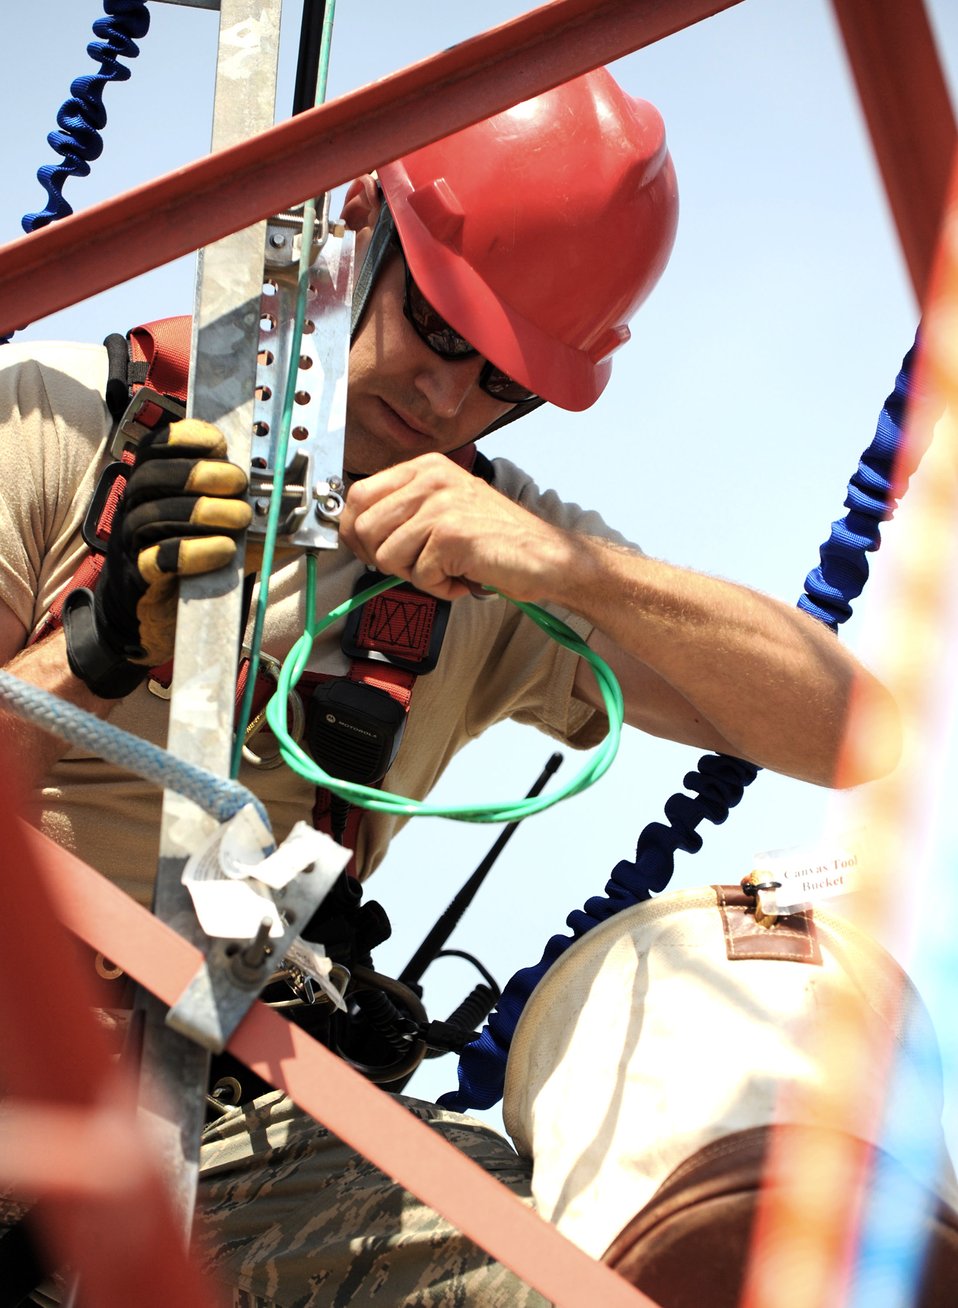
Upgrading communications tower

An Airman adds cabling for two new multiband antennas on a communications tower July 22, 2010, at F.S. Gabreski Air National Guard Base in Westhampton Beach, N.Y. He is assigned to the New York Air National Guard's 213th Engineering Installation Squadron at nearby Stewart ANGB in Newburgh.